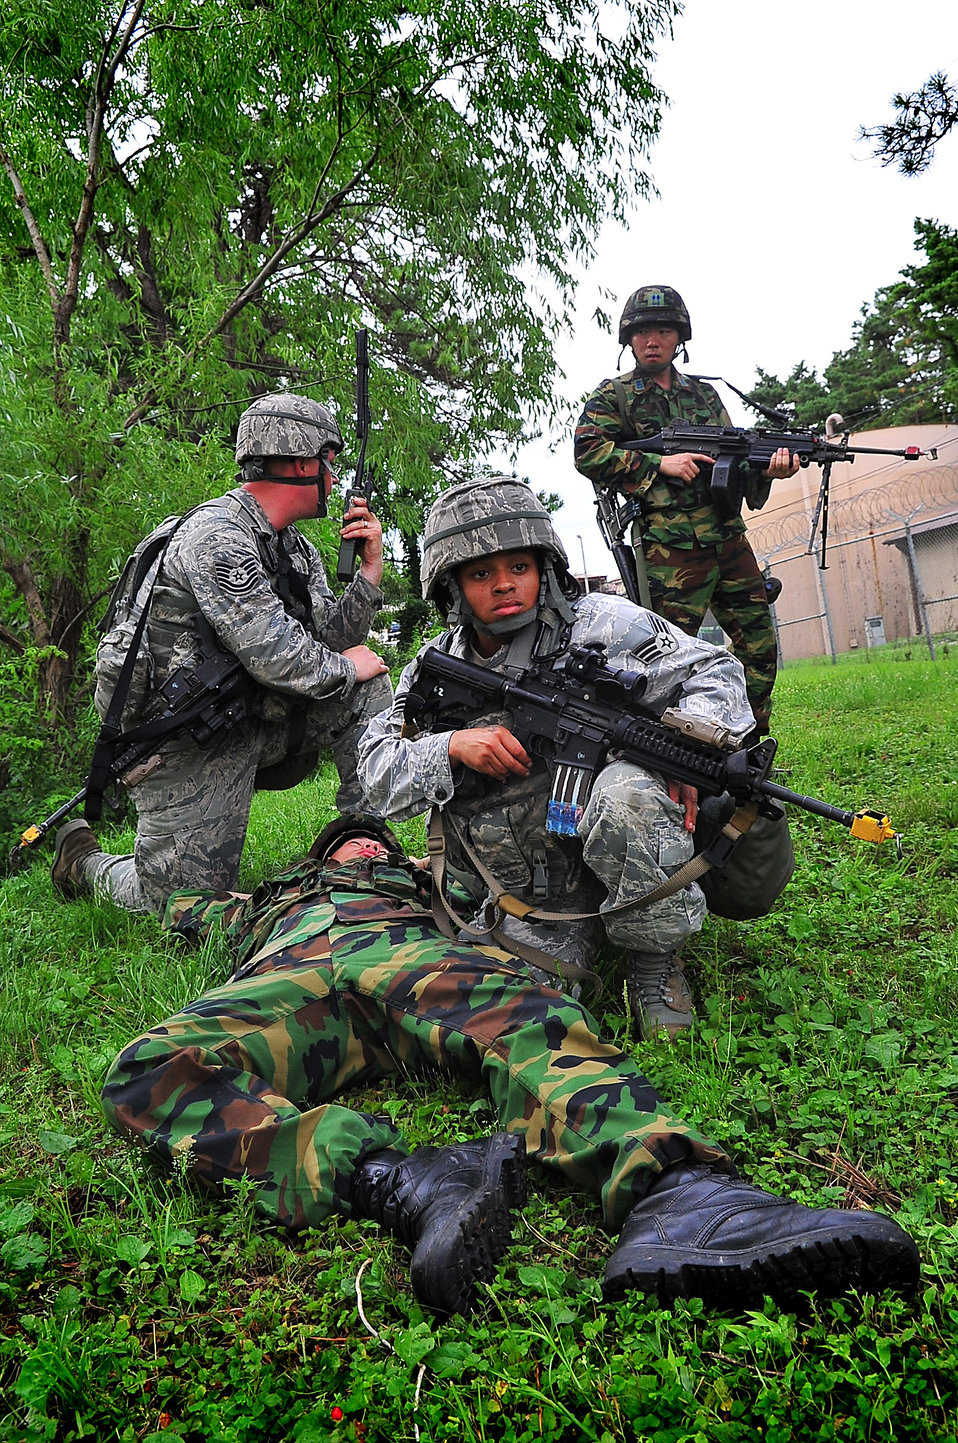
No Airman left behind

Airmen from the 51st Security Forces Squadron and South Korea secure a team member who was captured and held hostage June 30, 2011, during a combat readiness course scenario at Osan Air Base, South Korea. The Airmen executed troop movement maneuvers, communication tactics, room clearing and hostage extraction.